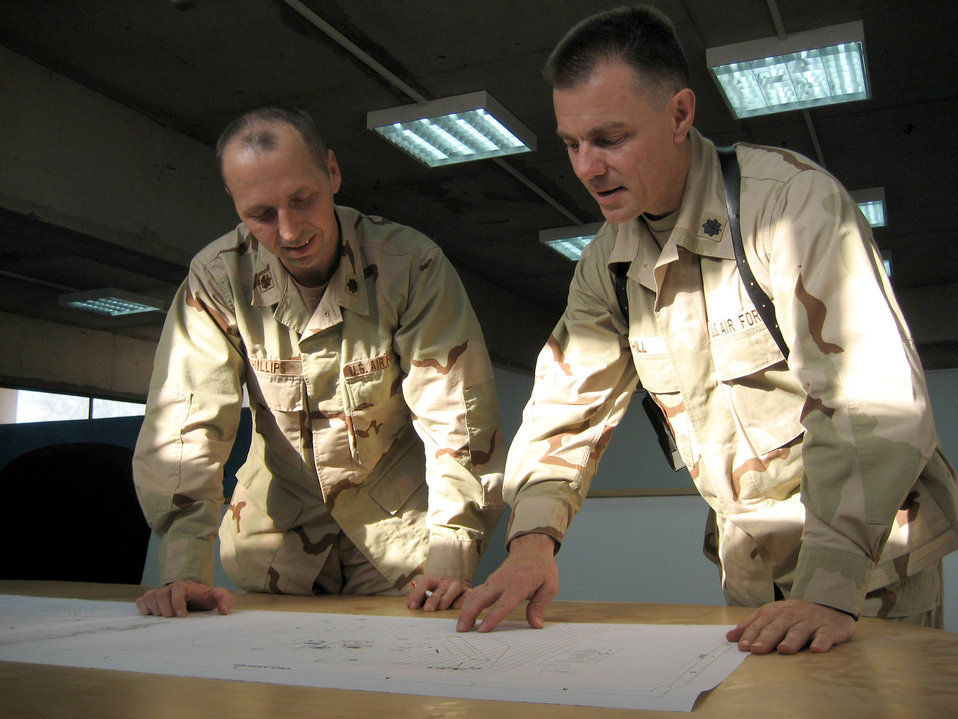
RED HORSE helps build combat brigade base in 45 days

Lead Air Force engineer for the Besmaya beddown project Maj. Steve Phillips and 557th Expeditionary RED HORSE Squadron director of operations Lt. Col. Scott Hill review plans for the Besmaya basecamp.